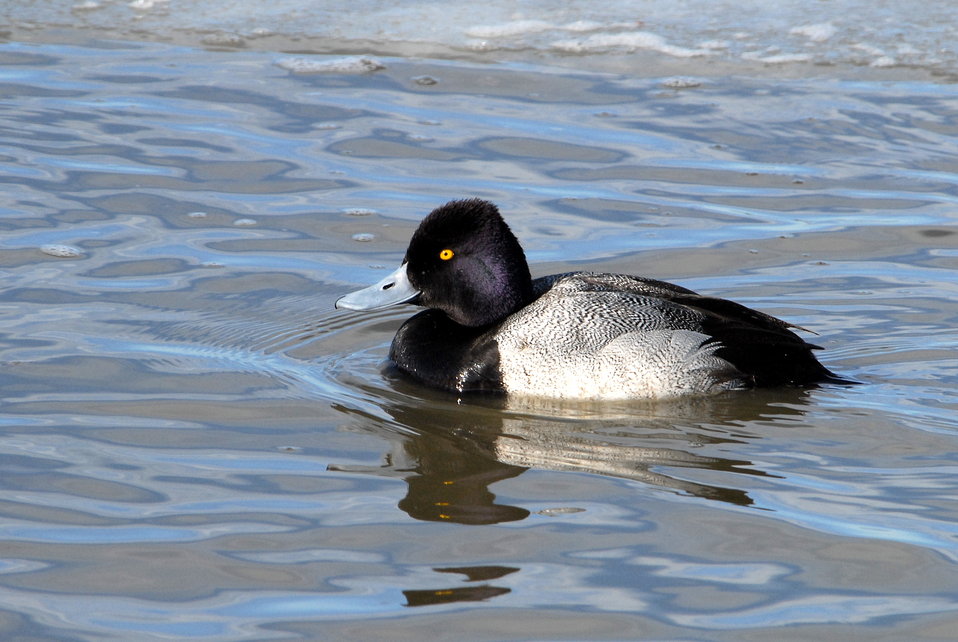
Lesser Scaup (male)